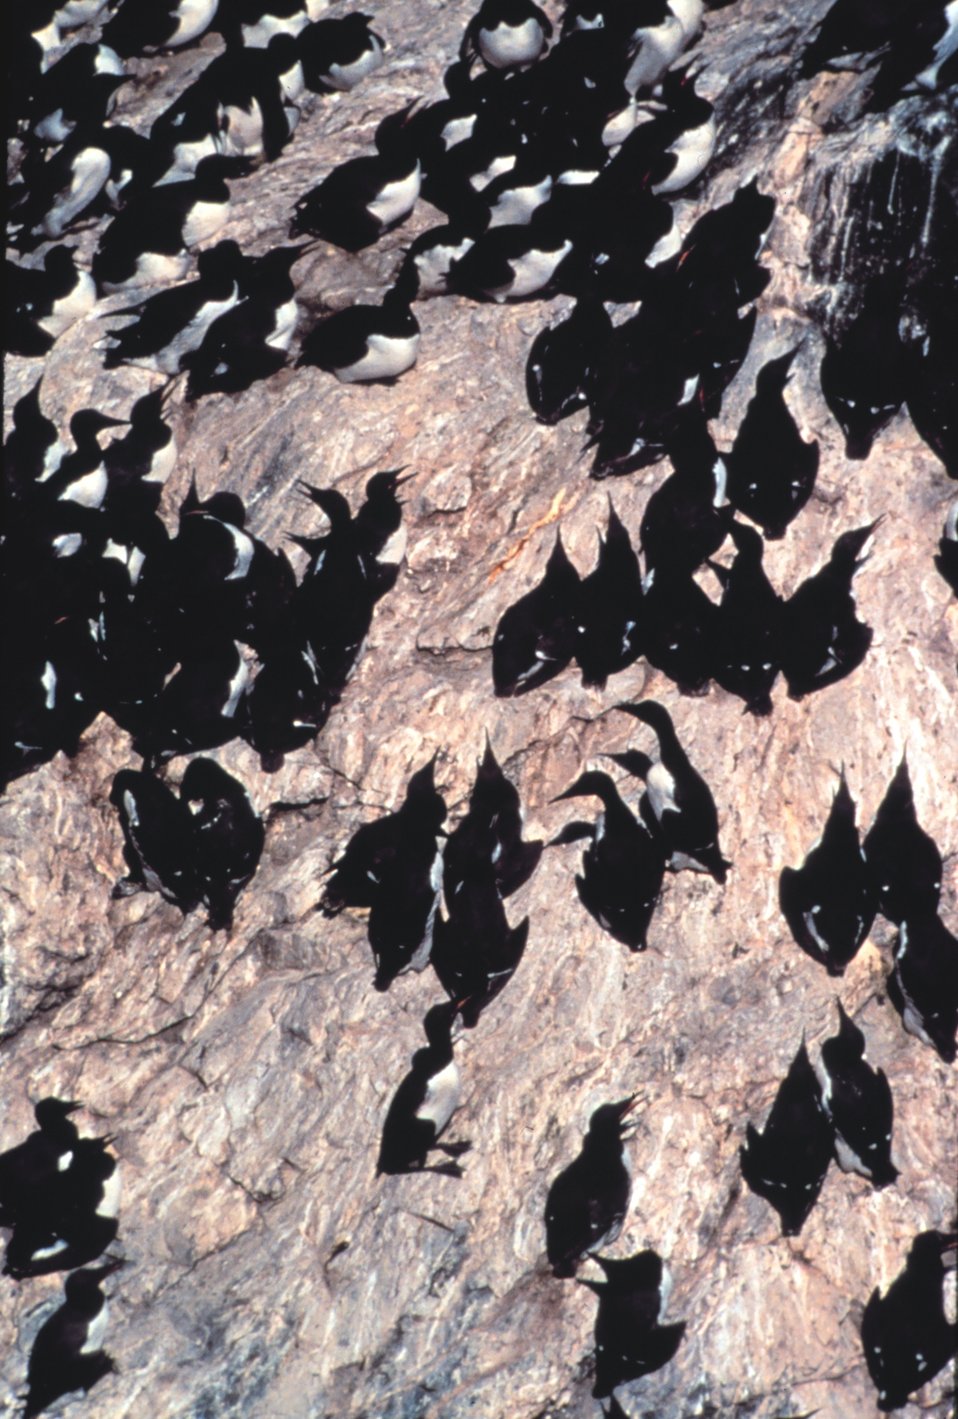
Murre colony